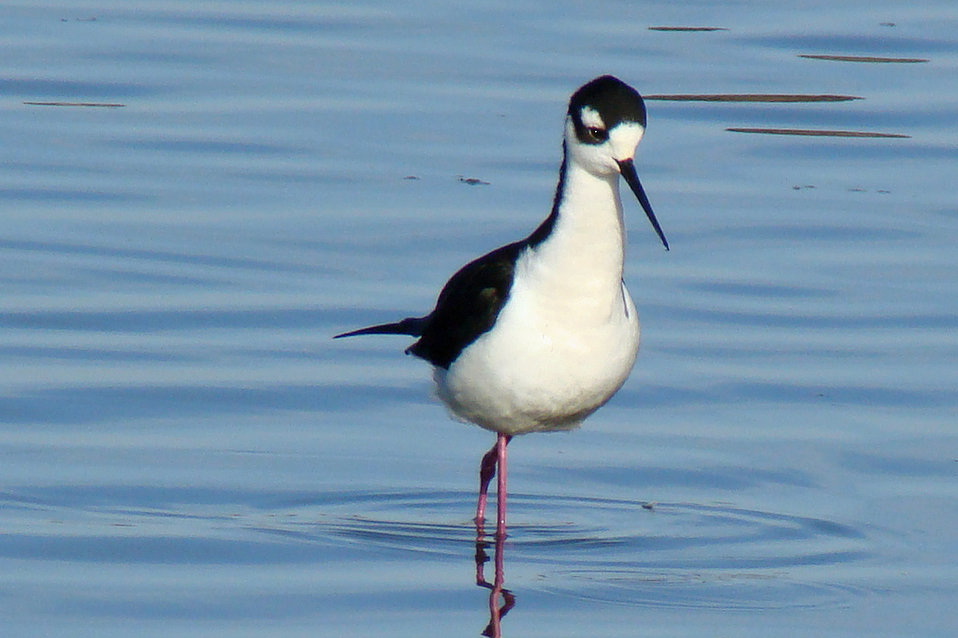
black necked stilt

A black-necked stilt wades in a pond at CA's Colusa National Wildlife Refuge on Jan. 12, 2012